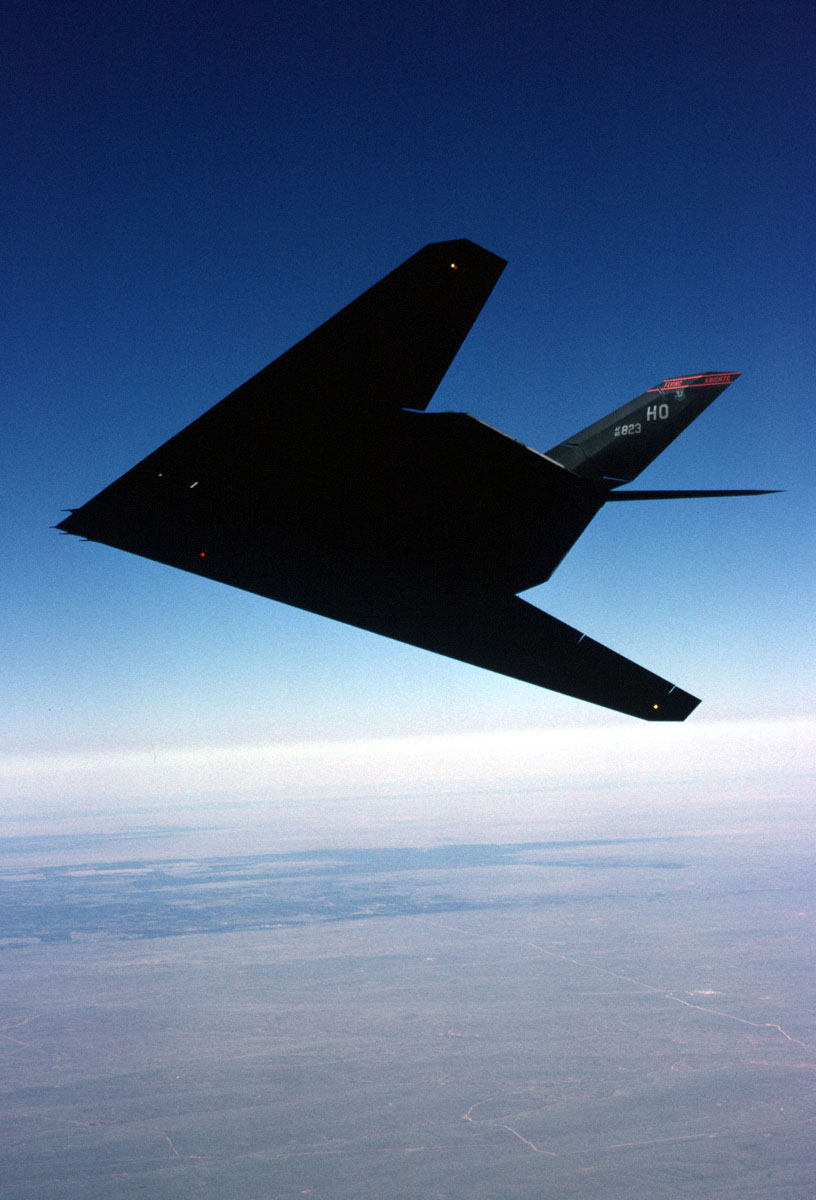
Iron Knights

NEW MEXICO -- The F-117A Nighthawk Stealth fighter from the 49th Fighter Wing, 9th Fighter Squadron